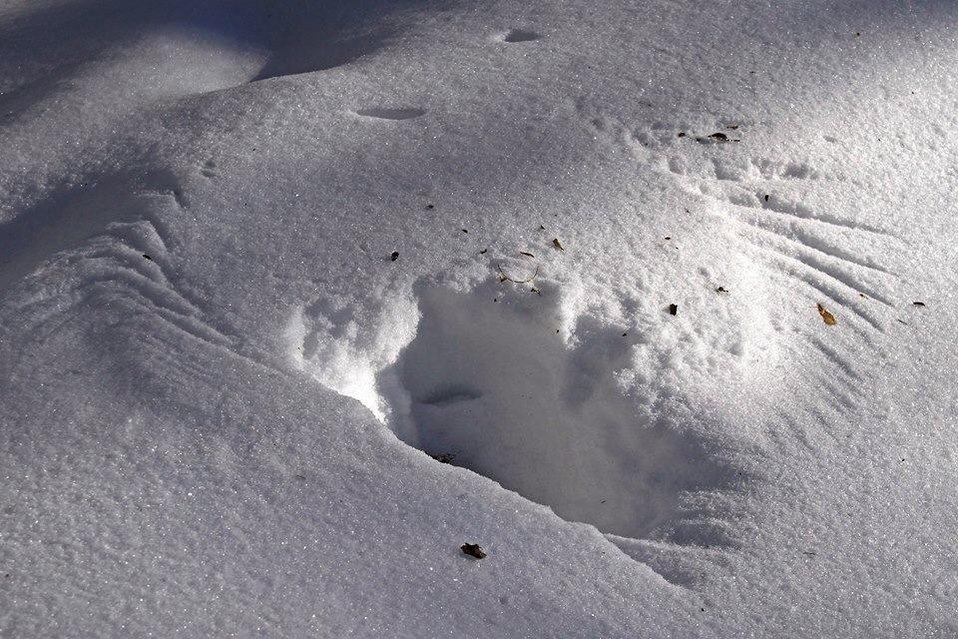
Snow angel

Tamarac Refuge, MN 1.usa.gov/19nDSb2

Why did a large-winged bird make such a deep impression in the snow? Did a hawk or other predator swoop down to seize a mouse or rabbit?